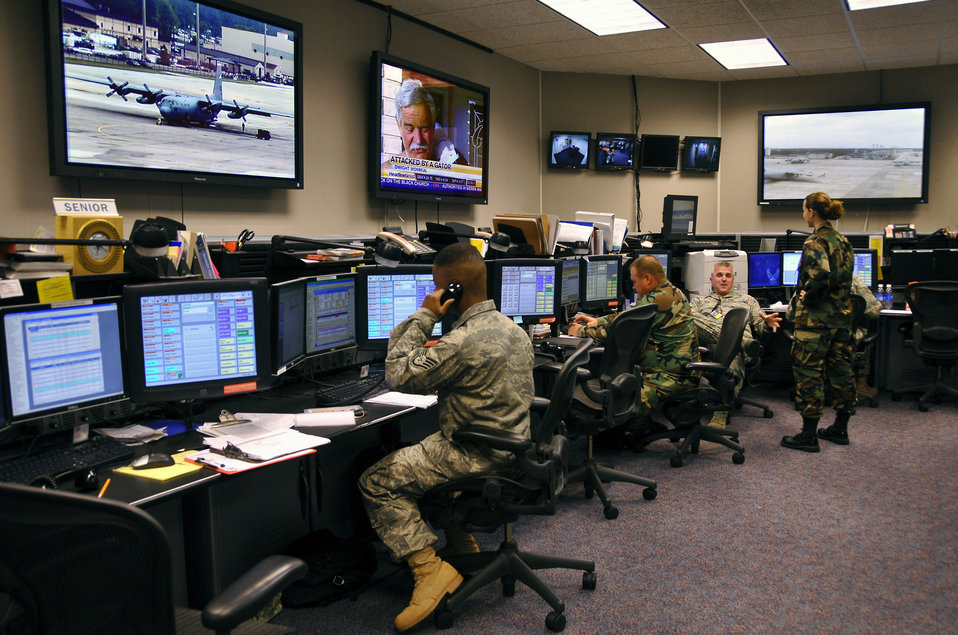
Pope command posts combine to increase efficiency

Airmen monitor base activities at the fully-integrated command post monitors in August at Pope Air Force Base, N.C. Reservists and active-duty Airmen work side-by-side to execute the command post mission.